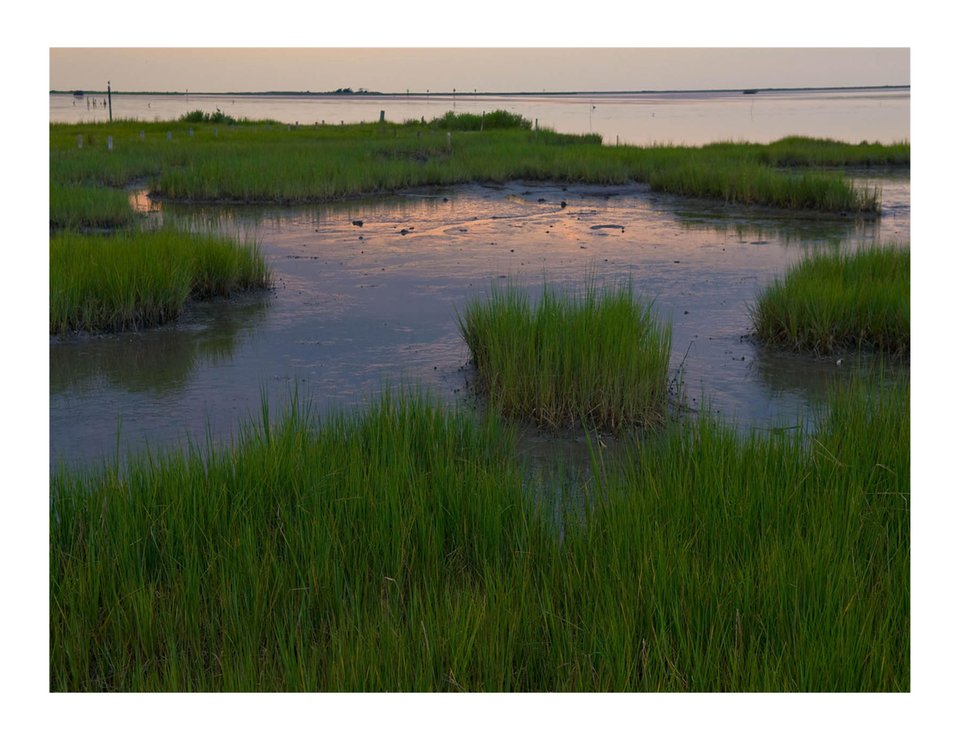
Sunrise on the march, Louisiana